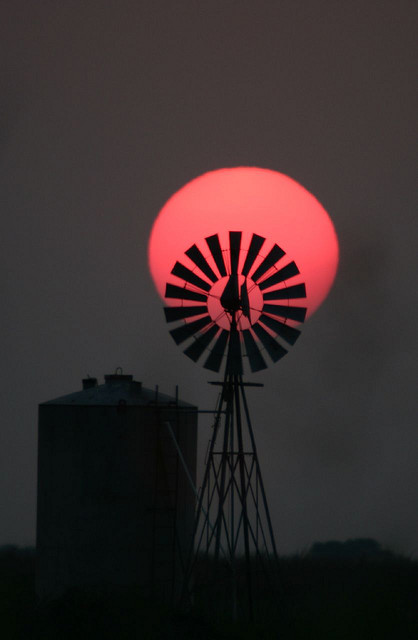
summer sunset

Attwaters Prairie Chicken National Wildlife Refuge, TX